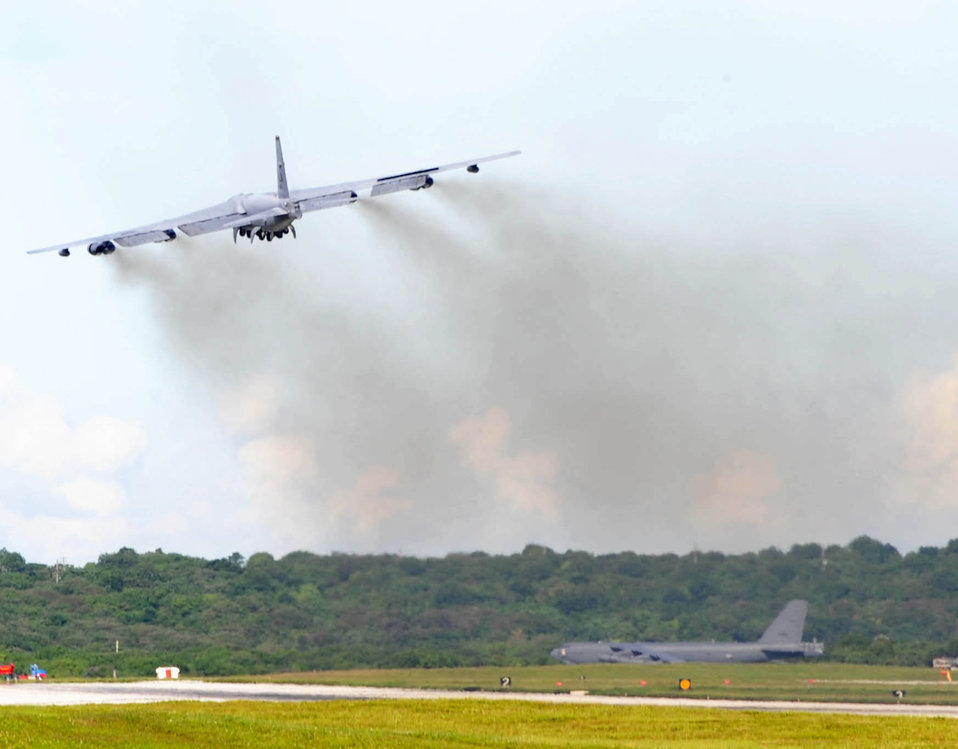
B-52 Stratofortress takes off from Andersen AFB, Guam

A B-52 Stratofortress from the 96th Expeditionary Bomb Squadron takes off Aug. 25, 2009, from Andersen Air Force Base, Guam. The B-52 is deployed from Barksdale AFB, La., to support U.S. Pacific Command's continuous bomber presence in the Asia-Pacific region.